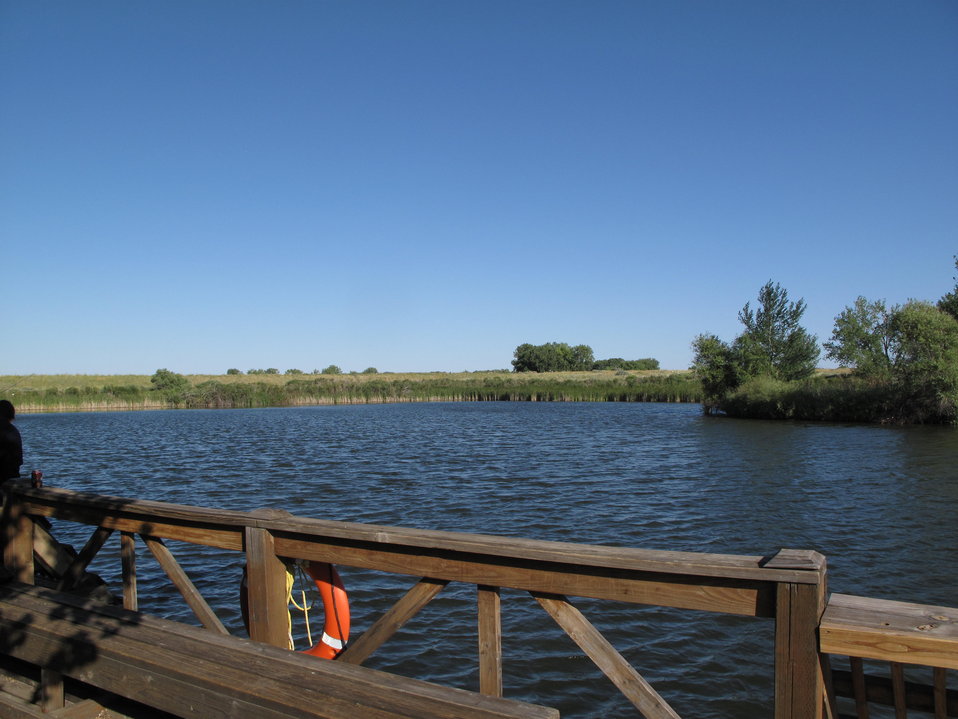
ELK fishing trip to RM Arsenal